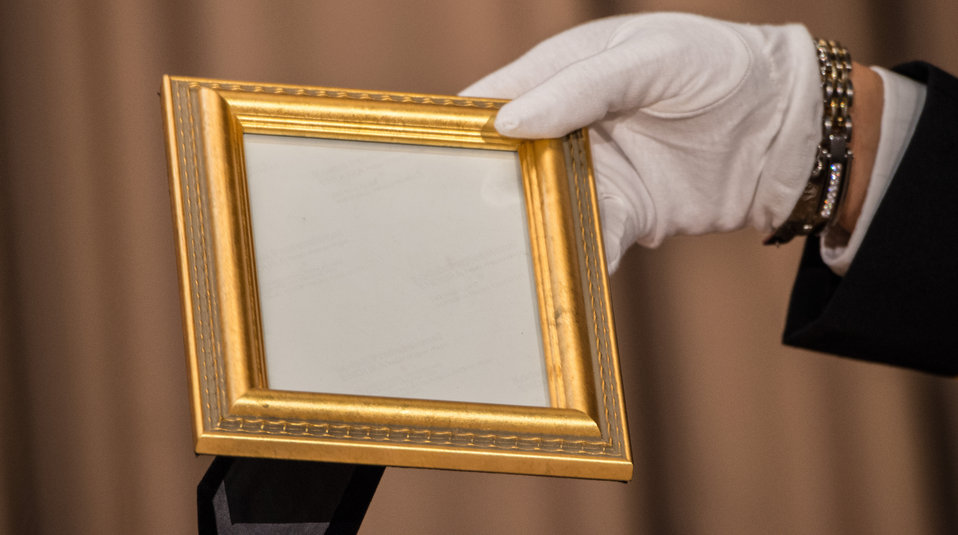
The POW/MIA Missing in Action Table and Honors Ceremony, reminds us that the empty picture frame signifies that they are missed, during the 2013 U.S. Department of Agriculture (USDA) Veterans’ Day Observance, whose theme is “VALOR, COURAGE, SACRIFICE – HONORING ALL WHO SERVED,” in Washington, DC, on Wednesday, November 20, 2013.